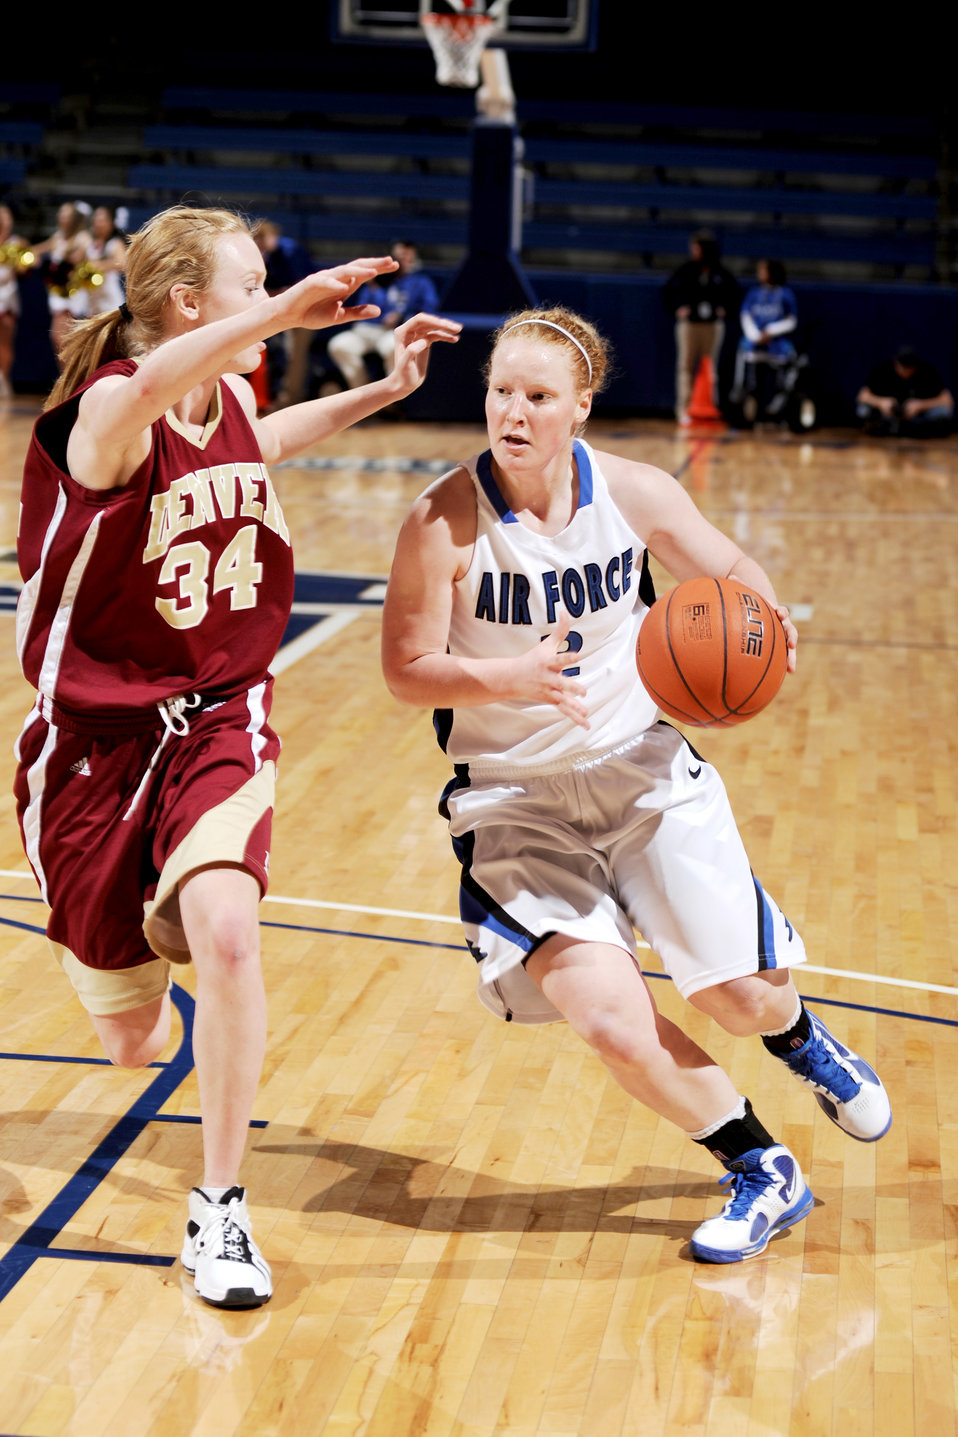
Air Force Academy

U.S. Air Force Academy, CO -- Freshman guard Alicia Leipprandt drives towards the basket as the Falcons lost to the Denver Pioneers 64-62 at Clune Arena Dec 9. Air Force returns to action Saturday, Dec 19, hosting Bradley.